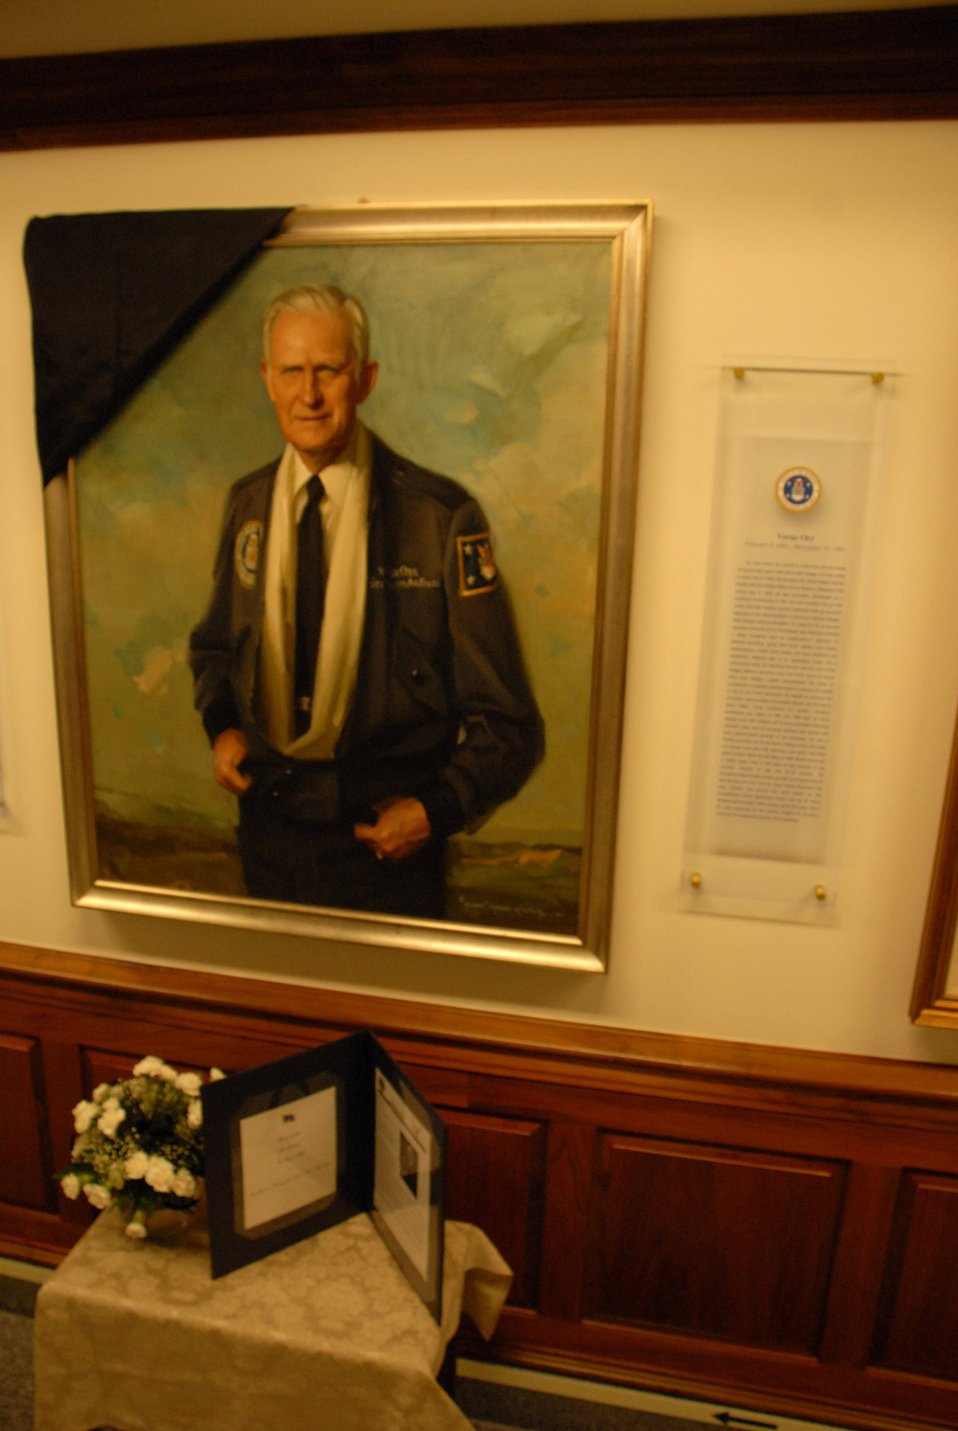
Verne Orr

A memorial table was placed in the Air Force Corridor of the Pentagon Dec. 5 under the portrait of Verne Orr, the fourteenth secretary of the Air Force. He died Nov. 27 at age 92 in his home in Pasadena, Calif. He served under President Ronald Reagan from 1981 to 1985.